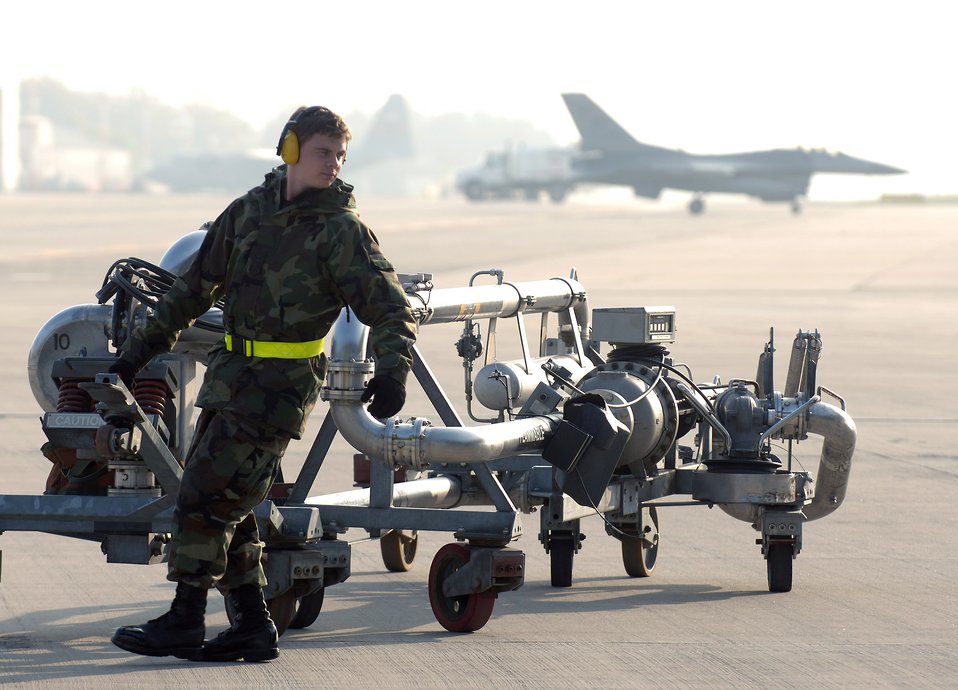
Ramstein flightline ops

Airman 1st Class Jesse Hayes moves a pipe system, known as a pantograph, into place before pumping JP-8 fuel into a C-17 Globemaster III at Ramstein Air Base, Germany, Oct. 11. Airman Hayes is a mobile fuels operator assigned to the 435th Logistics Readiness Squadron.